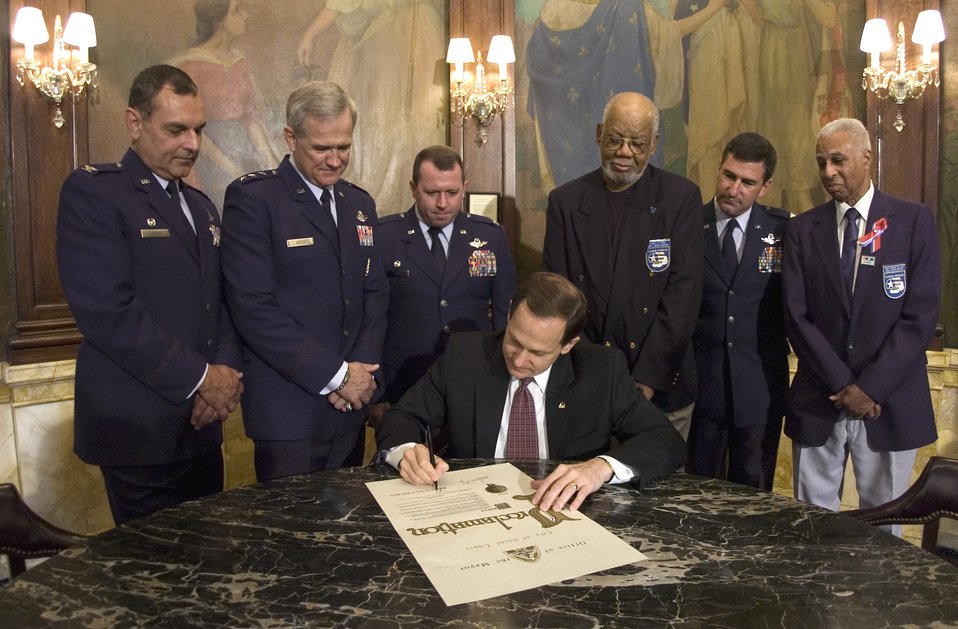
Proclamation declares Air Force Week

St. Louis Mayor Francis G. Slay signs a proclamation today declaring Aug. 6-13 as Air Force Week in St. Louis. Attending the ceremony were (from left) Col. Bob Leeker, 131st Fighter Wing commander; Lt. Gen. Christopher A. Kelly, Air Mobility Command vice commander; Col. Allen Hunt Jr., 375th Airlift Wing commander; Lewis Lynch, Hugh J. White Chapter of the Tuskegee Airmen; Col. Pete Nezamis, 126th Air Refueling Wing commander; and retired Col. John P. Morgan, Hugh J. White Chapter of the Tuskegee Airmen.